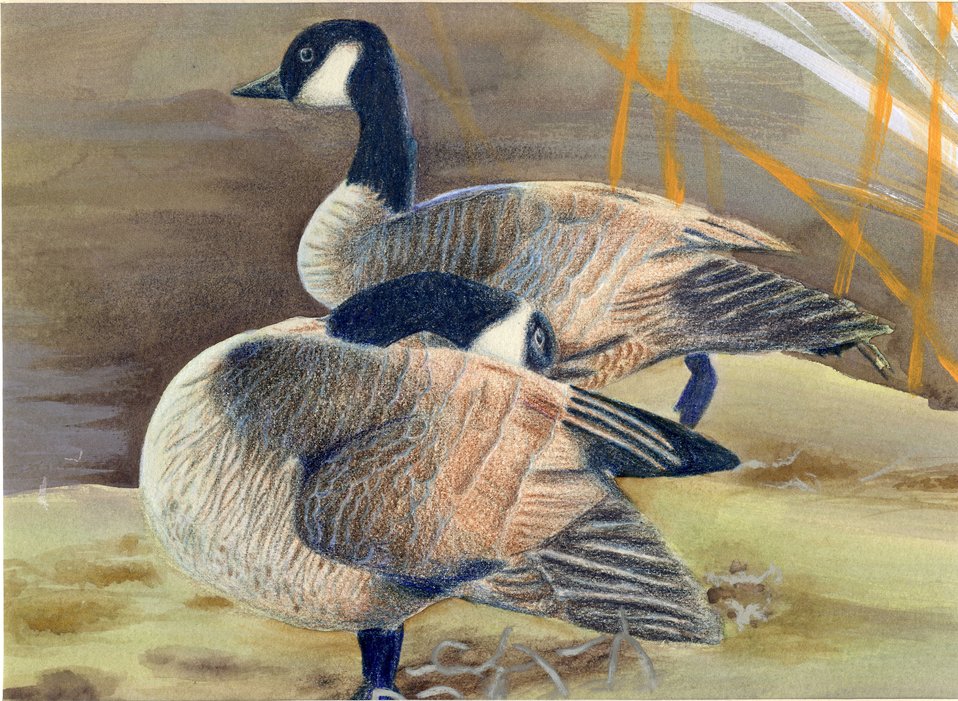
Idaho

2012 Jr Duck Stamp Program
State Best of Show
Idaho